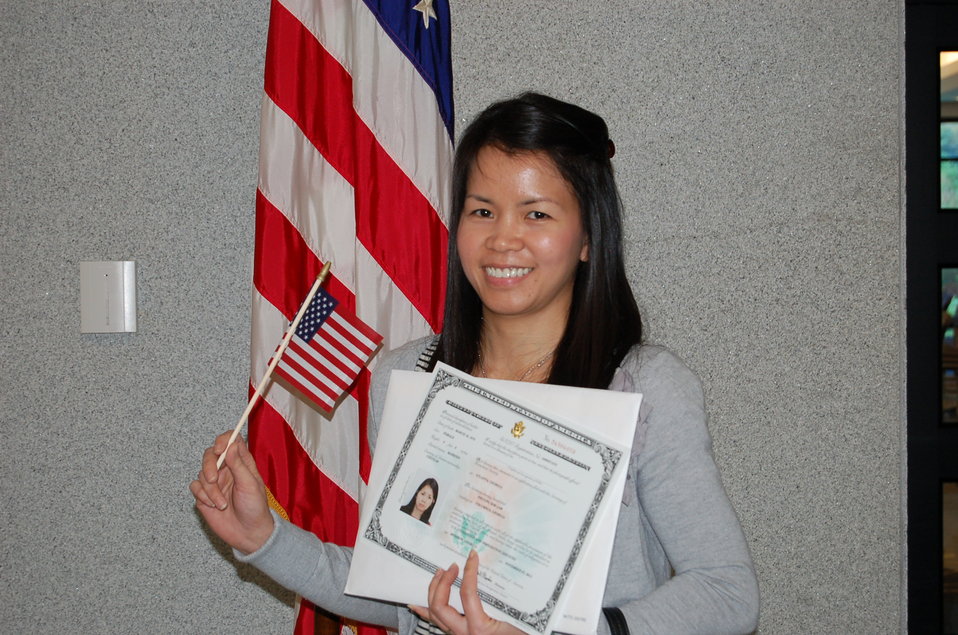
New Citizens